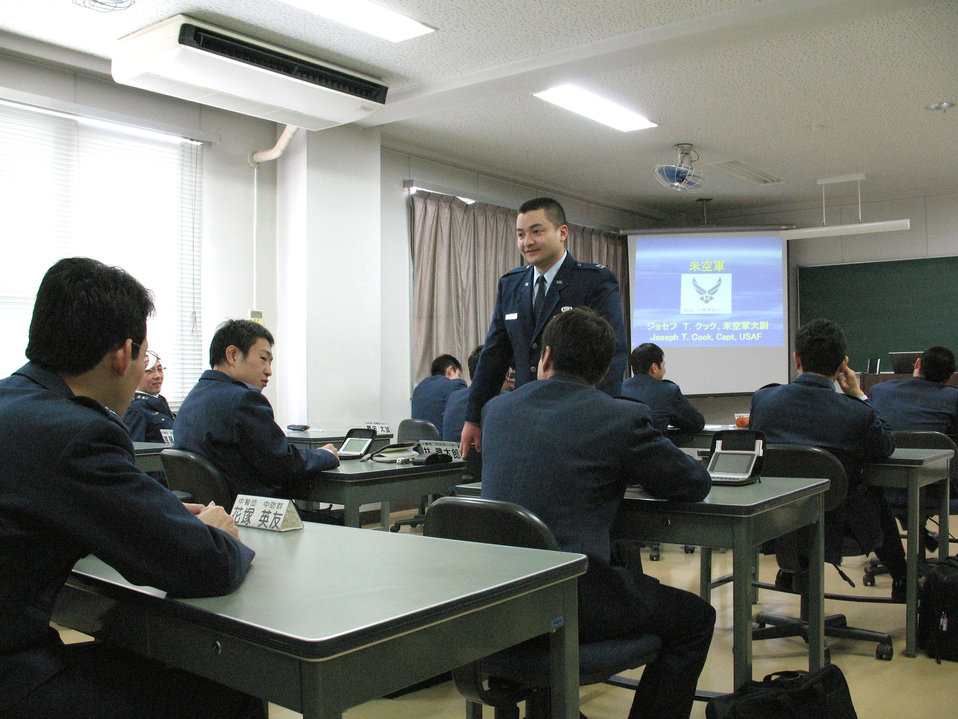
Captain shares language with Japanese airmen

Capt. Joseph Cook teaches English and offers an introduction to U.S. Air Force communication techniques to Japanes Air Self Defense Force officers and airmen Feb. 1 at Kumagaya Air Base in Japan. Captain Cook is the only American stationed here as part of the Japanese Personnel Exchange Program.